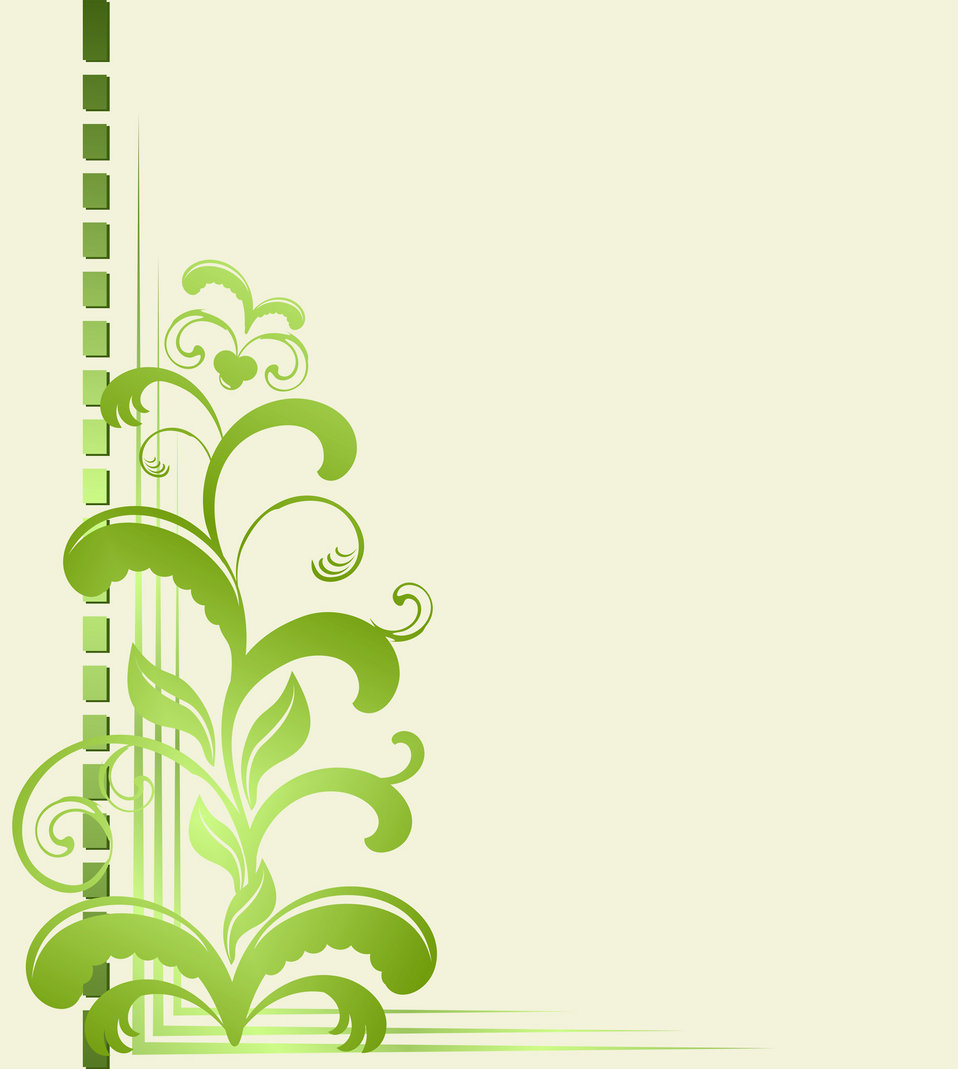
Green background for creativity.